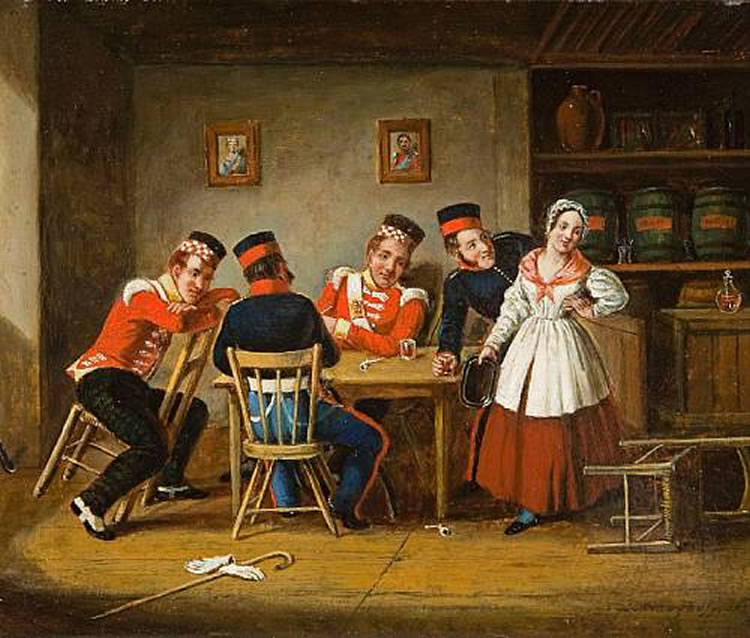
Dolly's Tavern, St. James Street, Montreal, oil painting by Cornelius Krieghoff, 20 x 25.5 in.